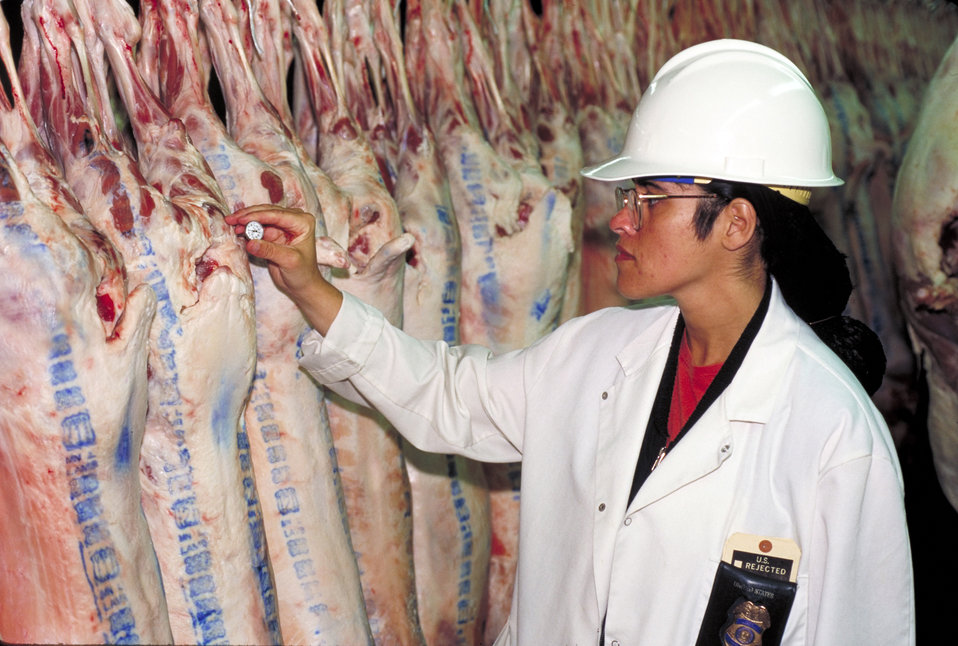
U.S. Department of Agriculture (USDA) Food Safety Inspection Service (FSIS) inspector checks the temperature of beef carcasses at various control points to compare them with those measured and recorded by the plant to prevent multiplication of pathogenic bacteria in compliance with Hazard Analysis and Critical Control Points (HACCP) issued by FSIS on June 15, 1995.